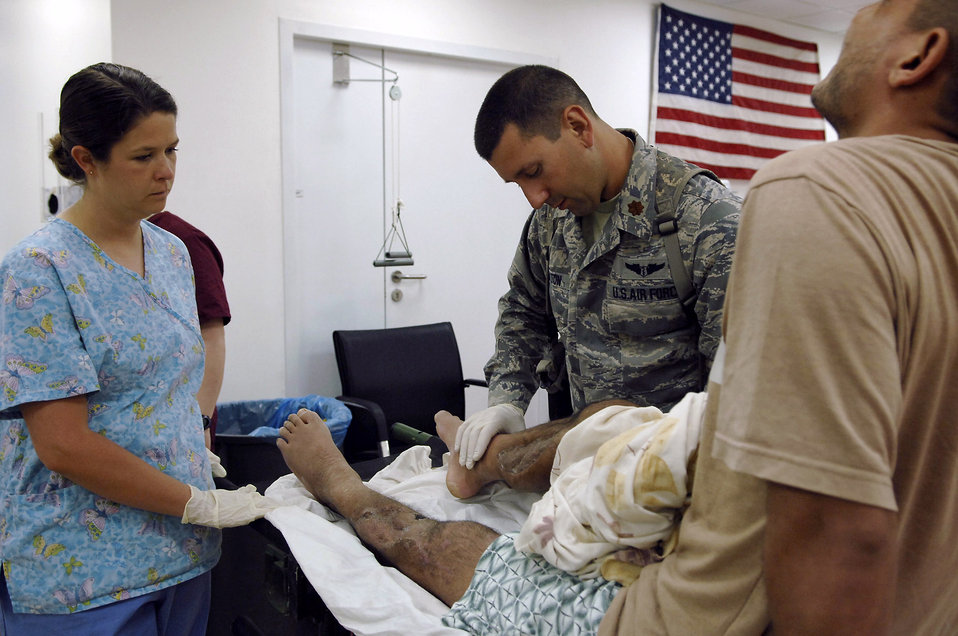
A new leg to stand on

Maj. (Dr.) Michael Charlton and Tech. Sgt. Judy Hickman examine the healing progress of the leg of an Iraqi policeman July 1 at Joint Base, Balad, Iraq. The injury is the result of an improvised explosive device attack earlier this year. Major Charlton, a 332nd Expeditionary Medical Operations Squadron orthopedic trauma surgeon, and Sergeant Hickman, a 332nd EMDOS orthopedic technician, are both deployed from Lackland Air Force Base, Texas.